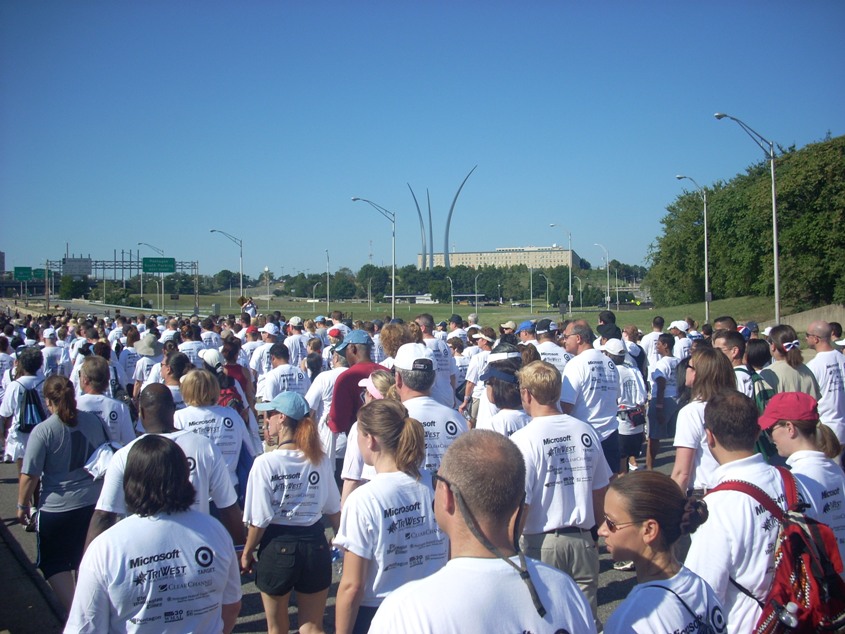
Thousands walk for freedom in Washington D.C.

With the spires of the Air Force Memorial in the distance, participants in the Fourth Annual America Supports You Freedom Walk Sept. 7, near the end of the 1-mile course at the Pentagon. This event is one of 330 such events designed to remember the Sept. 11, 2001, terrorist attacks on the United States.